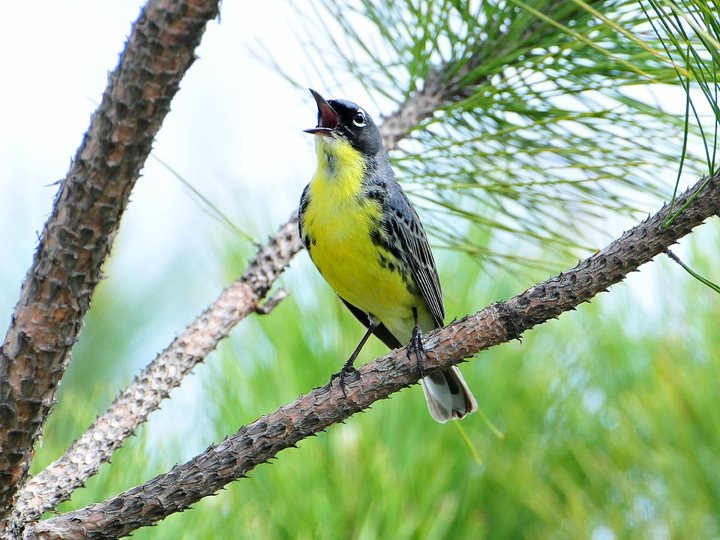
Endangered Kirtland Warbler

Michigan
Credit: Joel Trick/USFWS
The U.S. Fish and Wildlife Service, U.S. Forest Service, and Michigan Audubon Society are again providing opportunities to catch a glimpse of the endangered Kirtland’s warbler in northern Michigan this spring and summer.

The Fish and Wildlife Service and Michigan Audubon Society will lead tours from the Grayling, Michigan, Ramada Inn from May 15 through July 4. Tours are offered weekdays at 7 am and on weekends and holidays at 7 am and 11 am.

“This is an incredible opportunity to observe the endangered Kirtland’s warbler and view nesting areas,” said Dan Elbert, biologist with the U.S. Fish and Wildlife Service. “The warbler’s nesting areas in northern Michigan are closed to the public during nesting season.”

Most male Kirtland’s warblers arrive on the breeding grounds between May 1 and May 18, with the first females arriving a week or so after the first males. The best period for seeing the warbler is late May and the month of June. After July 1, viewing opportunities diminish. Participants are encouraged to bring binoculars and spotting scopes.